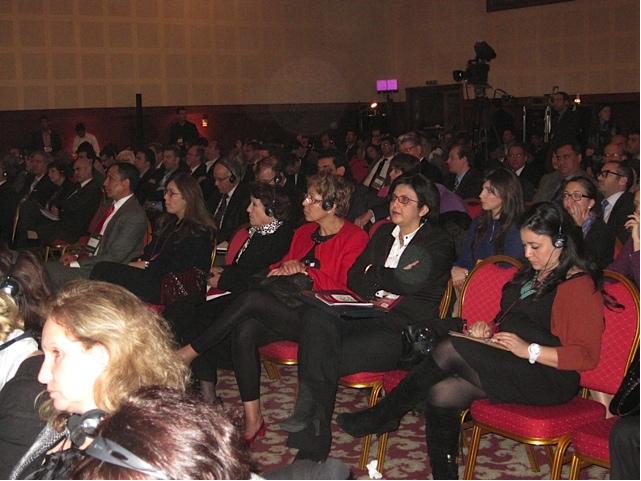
Participants Listen to Assistant Secretary Fernandez

Participants, including entrepreneurs, students, businesspeople, and investors from the U.S. and the Maghreb region, listen to Assistant Secretary for Economic and Business Affairs Jose W. Fernandez deliver remarks at the second U.S. – Maghreb Entrepreneurship Conference in Morocco, January 16-18, 2012. State Department photo/ Public Domain]